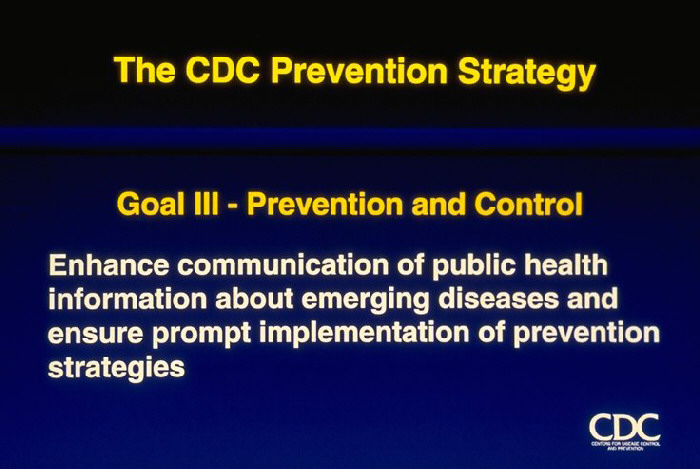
The CDC Prevention Strategy: Goal III--Prevention and Control (text)